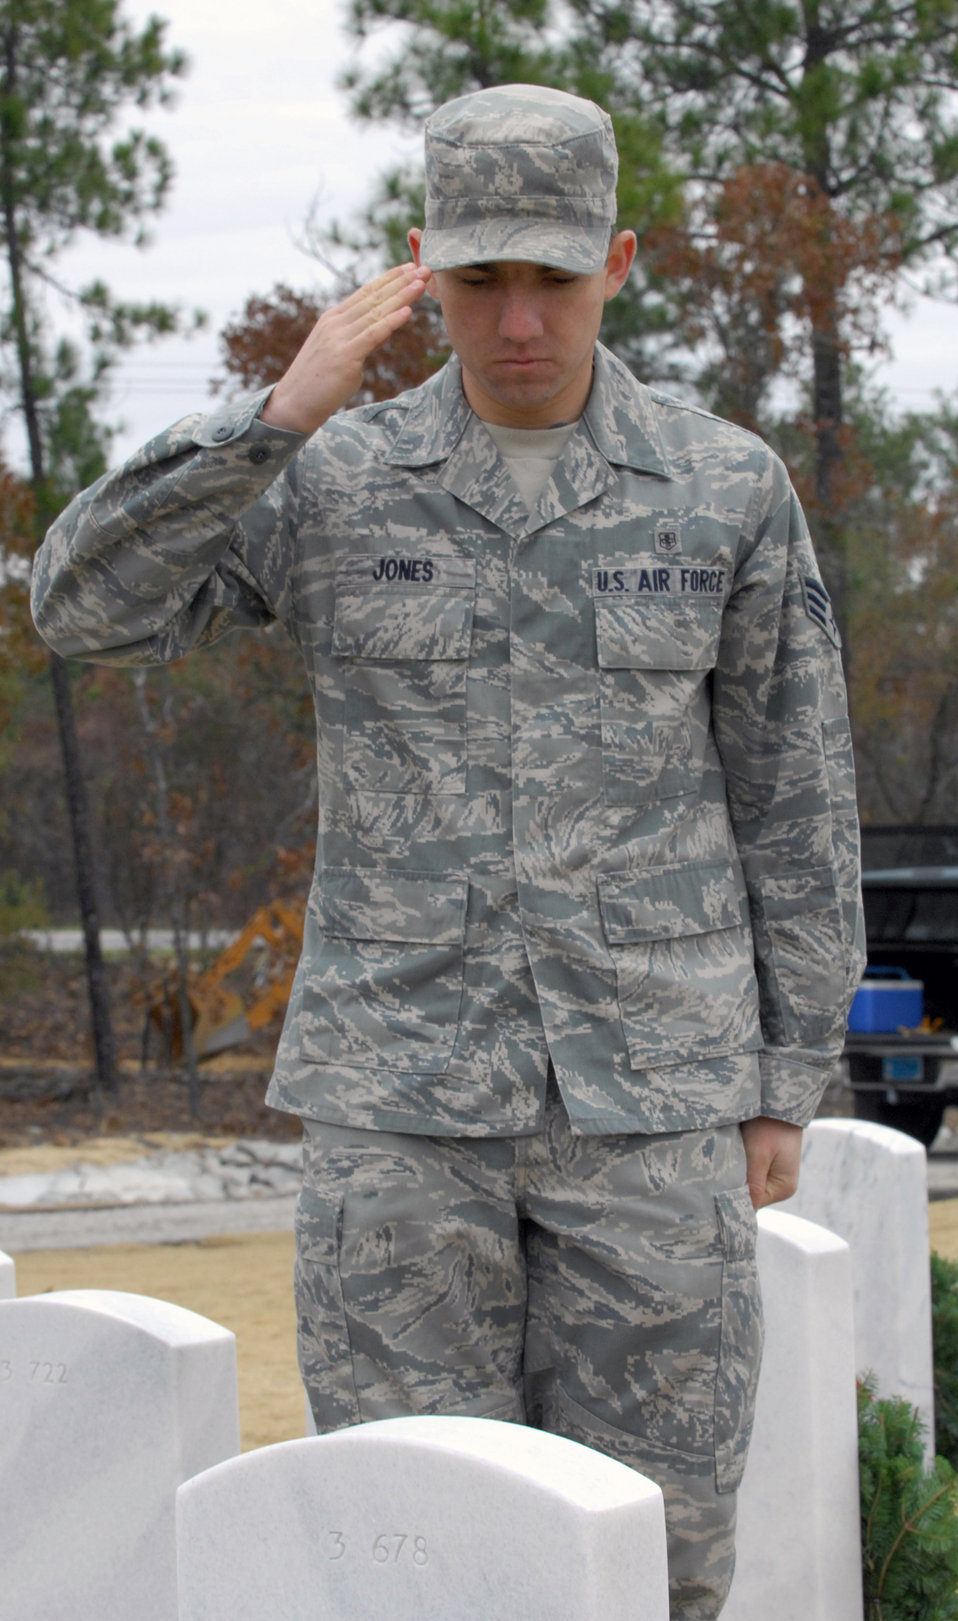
Wreaths Across America

Senior Airman Adrian Jones salutes the tombstone of a fallen veteran at the Wreaths Across America ceremony Dec. 11, 2010, at Fort Jackson National Cemetery in Columbia, S.C. The ceremony included a memorial presentation, World War II wreath laying, recognition of prisoners of war, those still missing in action and Merchant Marines, a salute by a cannon battery and buglers. Airman Jones is a medical technician with the 20th Medical Operations Squadron.